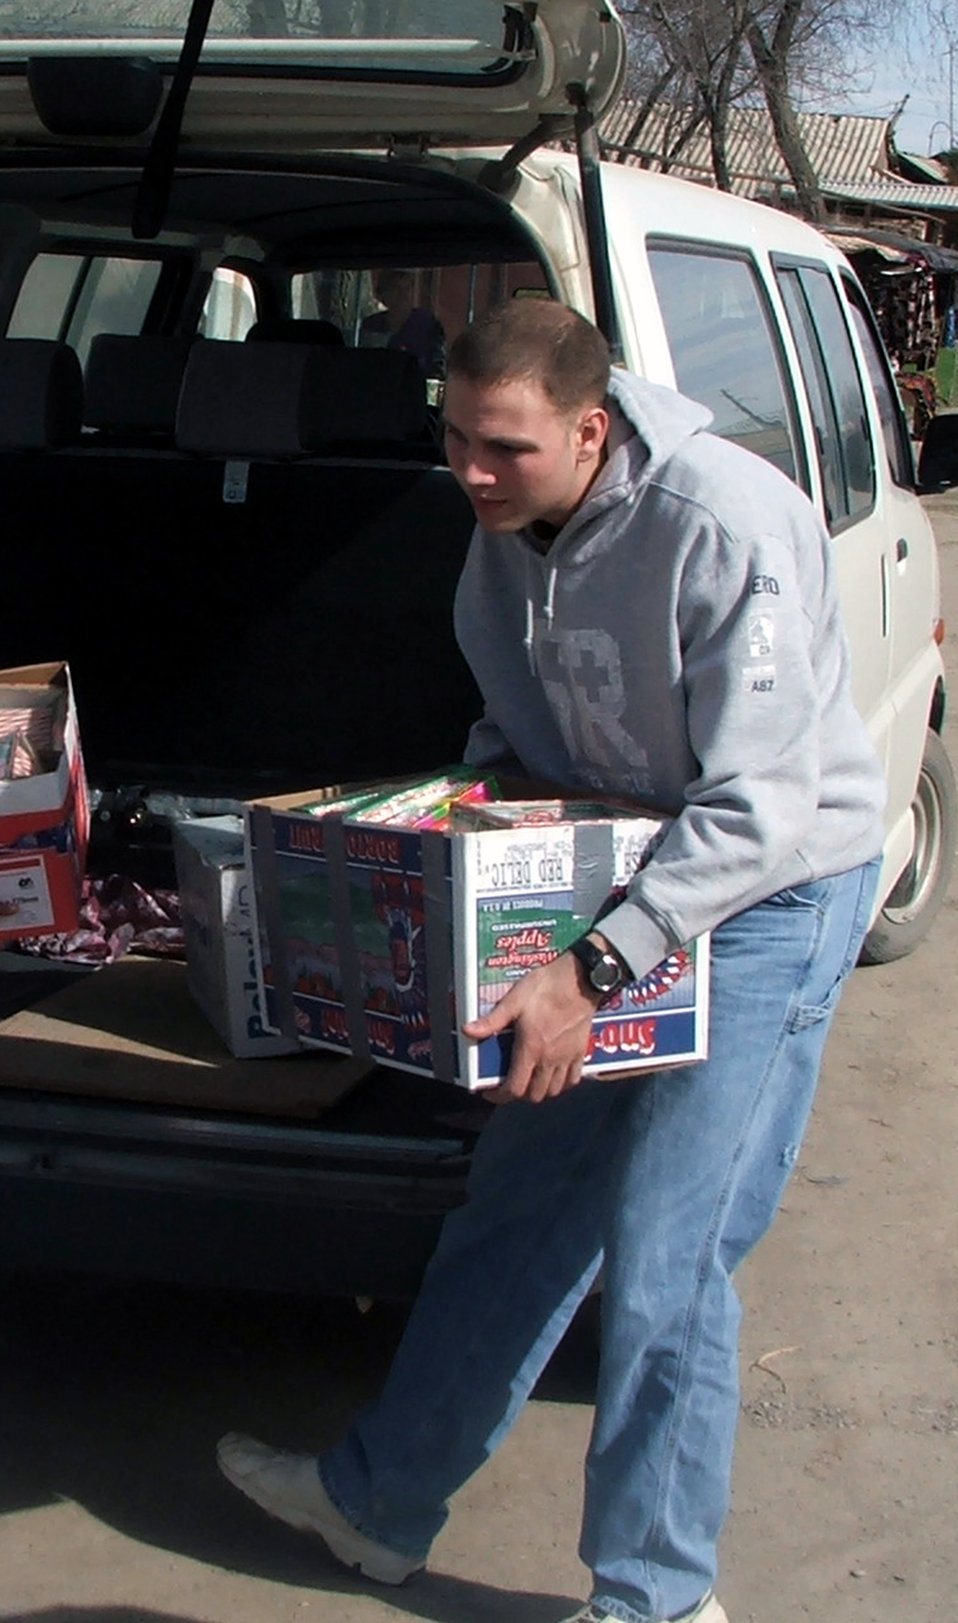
Airmen connect with Uzbeks through donations, volleyball

KHANABAD, Uzbekistan -- Senior Airman Jason Yarborough carries a box of humanitarian aid supplies for a local school during a visit here March 3. A group of Airmen and Soldiers from nearby Karshi-Khanabad Air Base visited the village medical clinic and the school where they played a volleyball game and handed out donations.